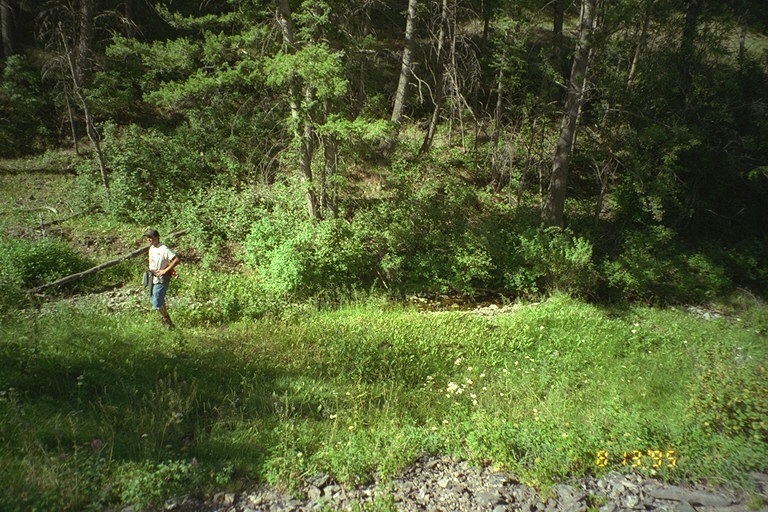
Riparian area Public Lands Salmon Field Office UCSC Upper Columbia Salmon Clearwater District